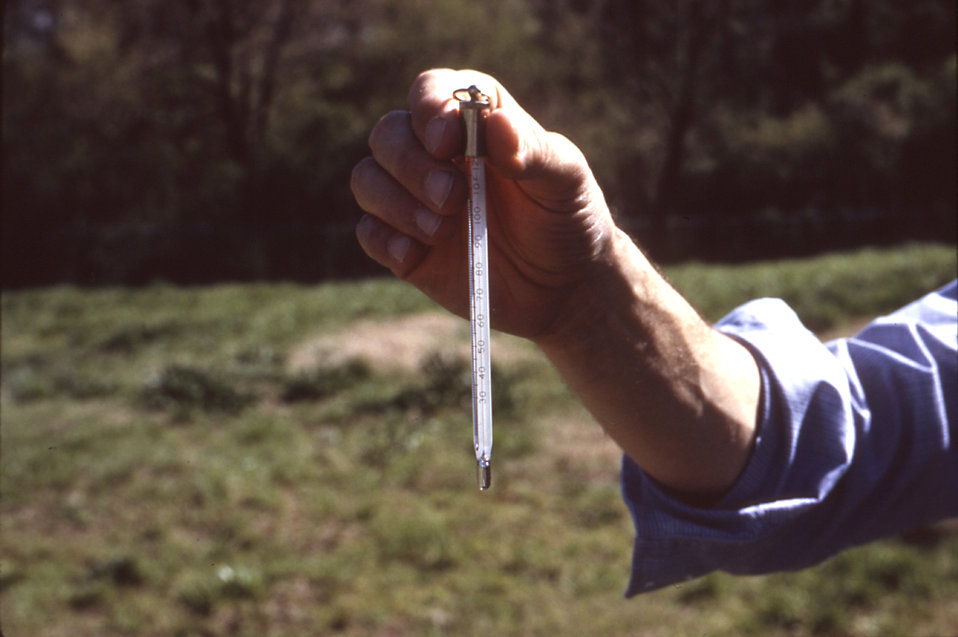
This 1981 photograph depicted a field technician as he used a thermometer in order to measure the atmospheric temperature in the immediate area into which an insecticide was to be introduced by an ultra low volume (ULV) fogger.